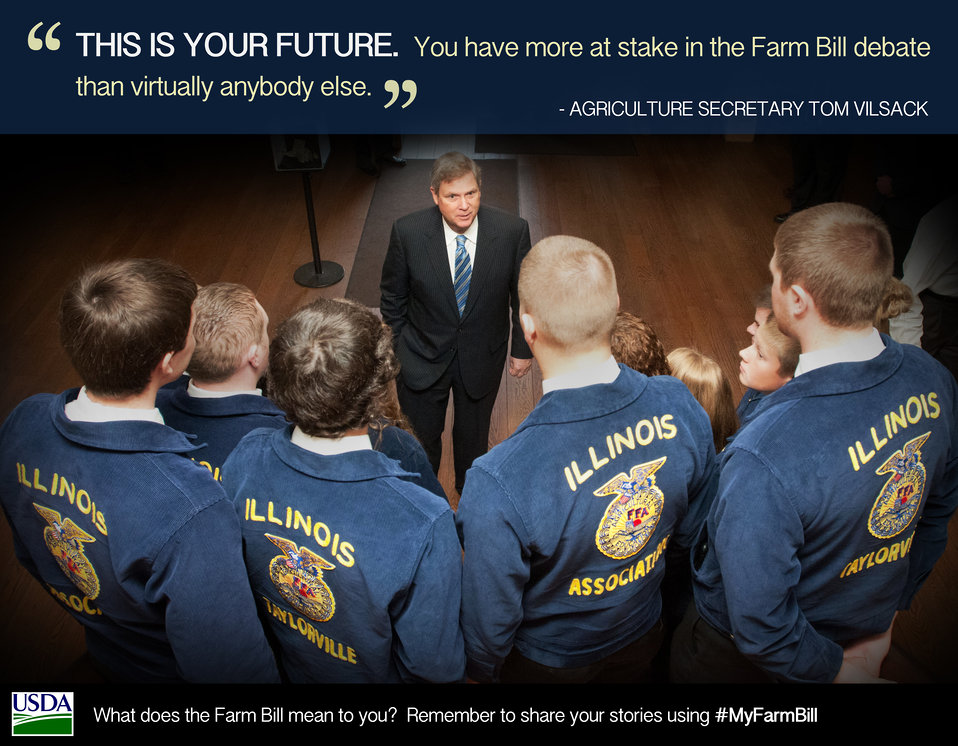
FFA #MyFarmBill Tile

Agriculture Secretary Tom Vilsack (center) spent a few moments with Illinois FFA before unveiling the new graphic to commemorate the 150th Anniversary of U.S. Department of Agriculture in the hometown of its founder President Abraham Lincoln. The event took place at the Old State Capitol in Springfield, IL, on Wednesday, November 2, 2011.